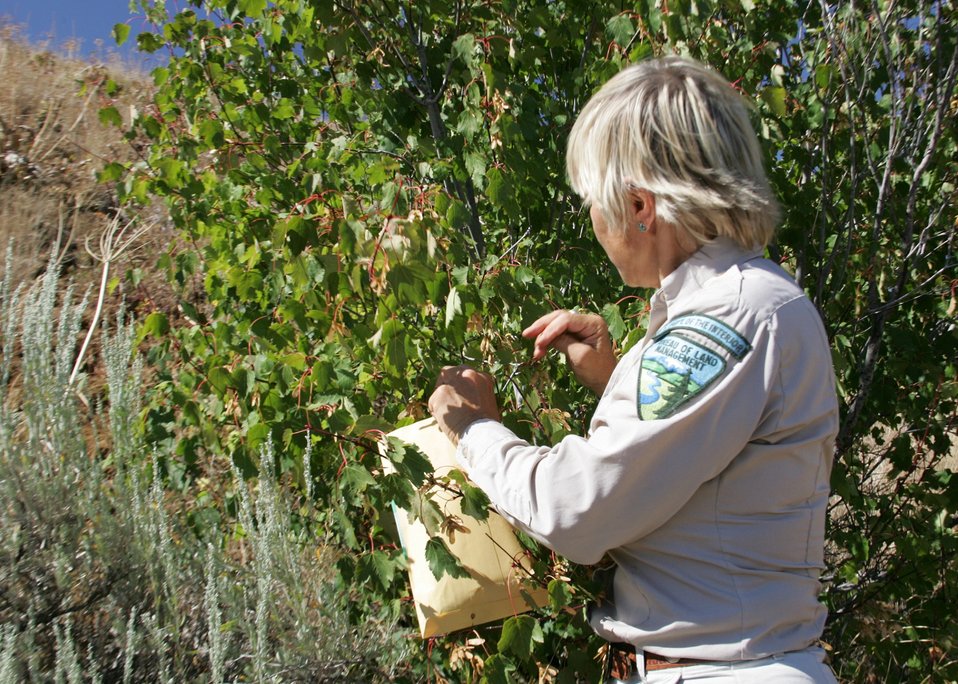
Kata Bulinski from the Baker City Field Office collects seeds from a Moutain Maple in the Snake River area of eastern Oretgon.